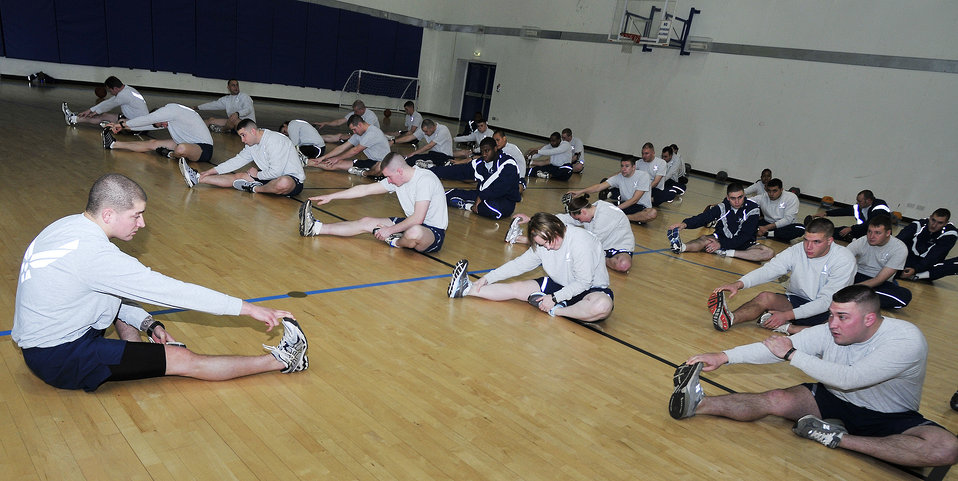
Stretched

Senior Airman Steven Evans, (left) the 48th Security Forces Squadron physical training leader, leads fellow 48th SFS members in a stretch during their workout at Royal Air Force Lakenheath, England, Jan. 12, 2012. Evans was selected by senior leadership to re-design their squadron physical training program.